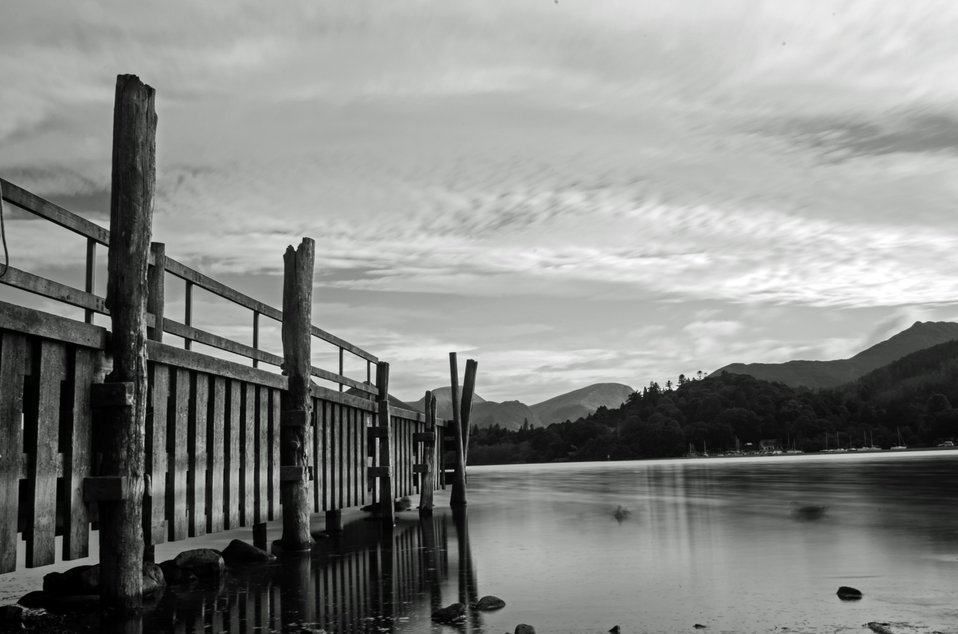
Pier on the water - black and white.